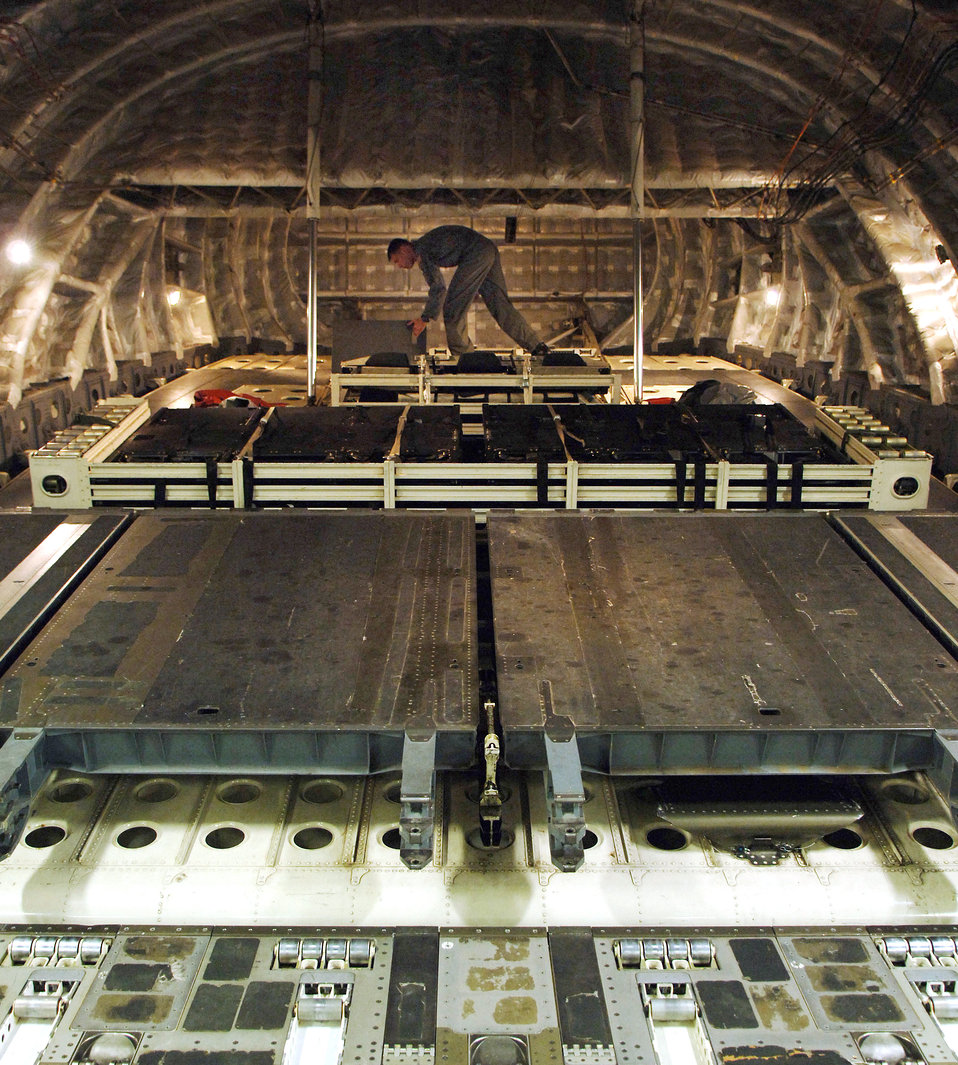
Loadmaster

Airman 1st Class Derrick Maloney checks the pins on the cargo door on a C-17 Globemaster III prior to a training mission Oct. 26 at Charleston Air Force Base, S.C. Airman Maloney is a loadmaster with the 17th Airlift Squadron.